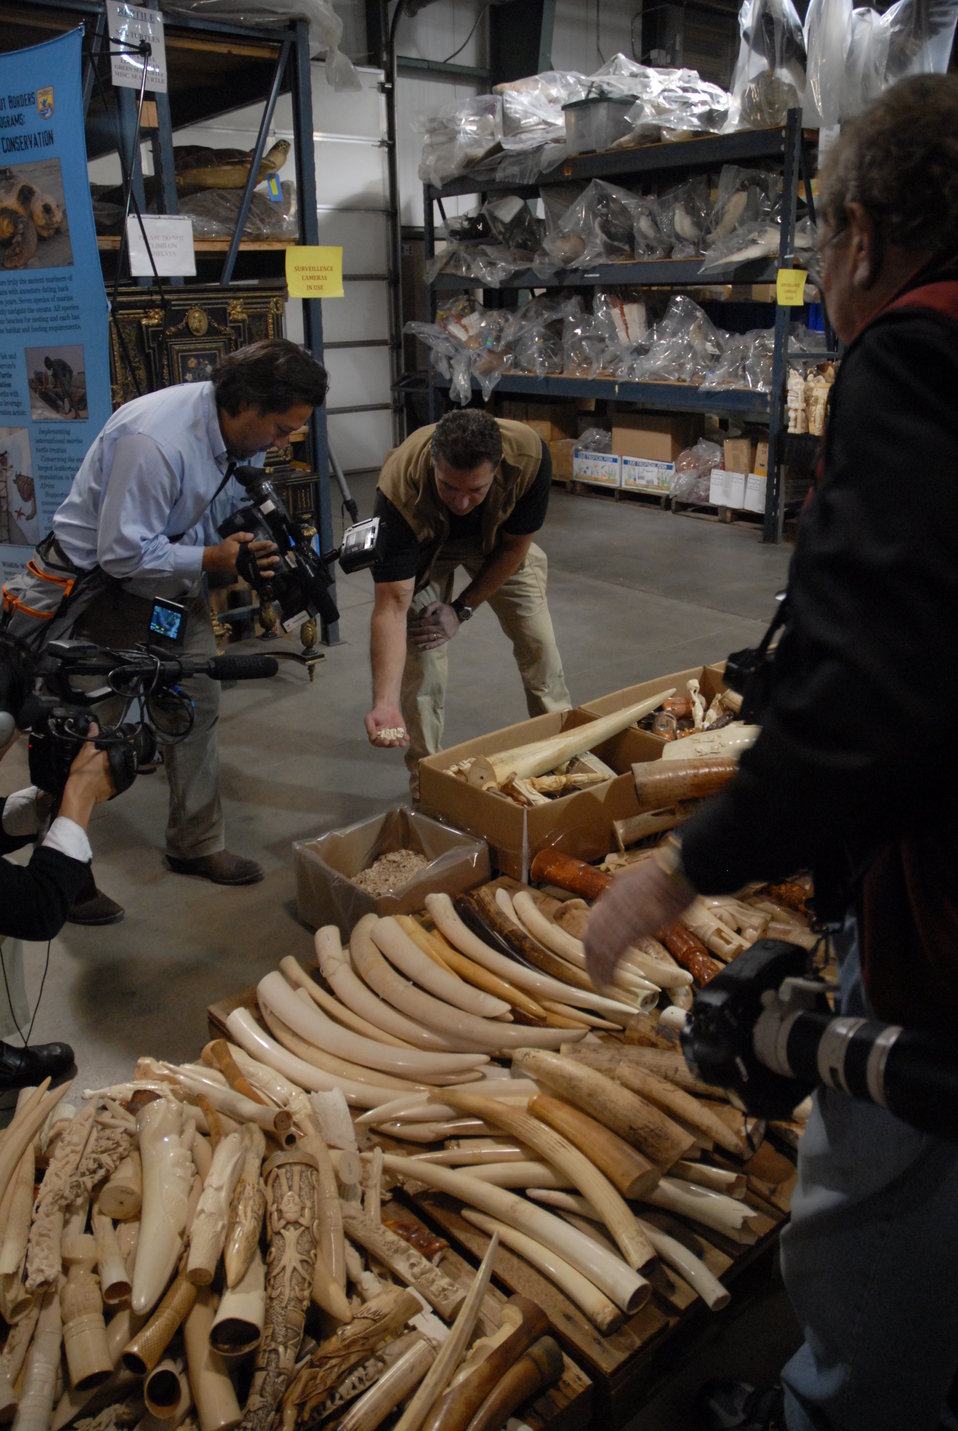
Steve Oberholtzer, USFWS Special Agent in Charge, Office of Law Enforcement discussing the ivory trafficking with reporters.